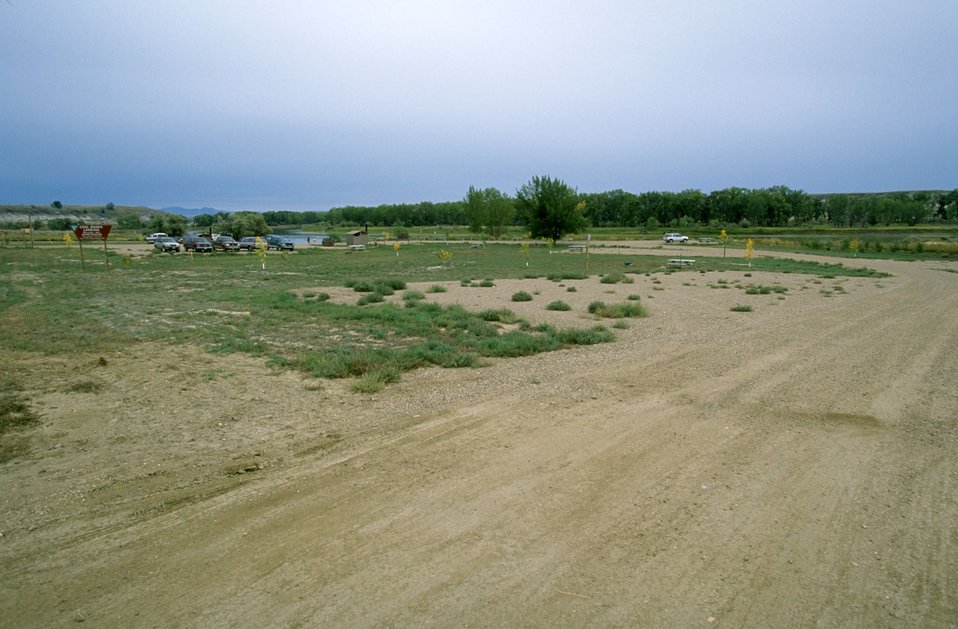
Parking lot at Coal Banks Landing on the Upper Missouri River